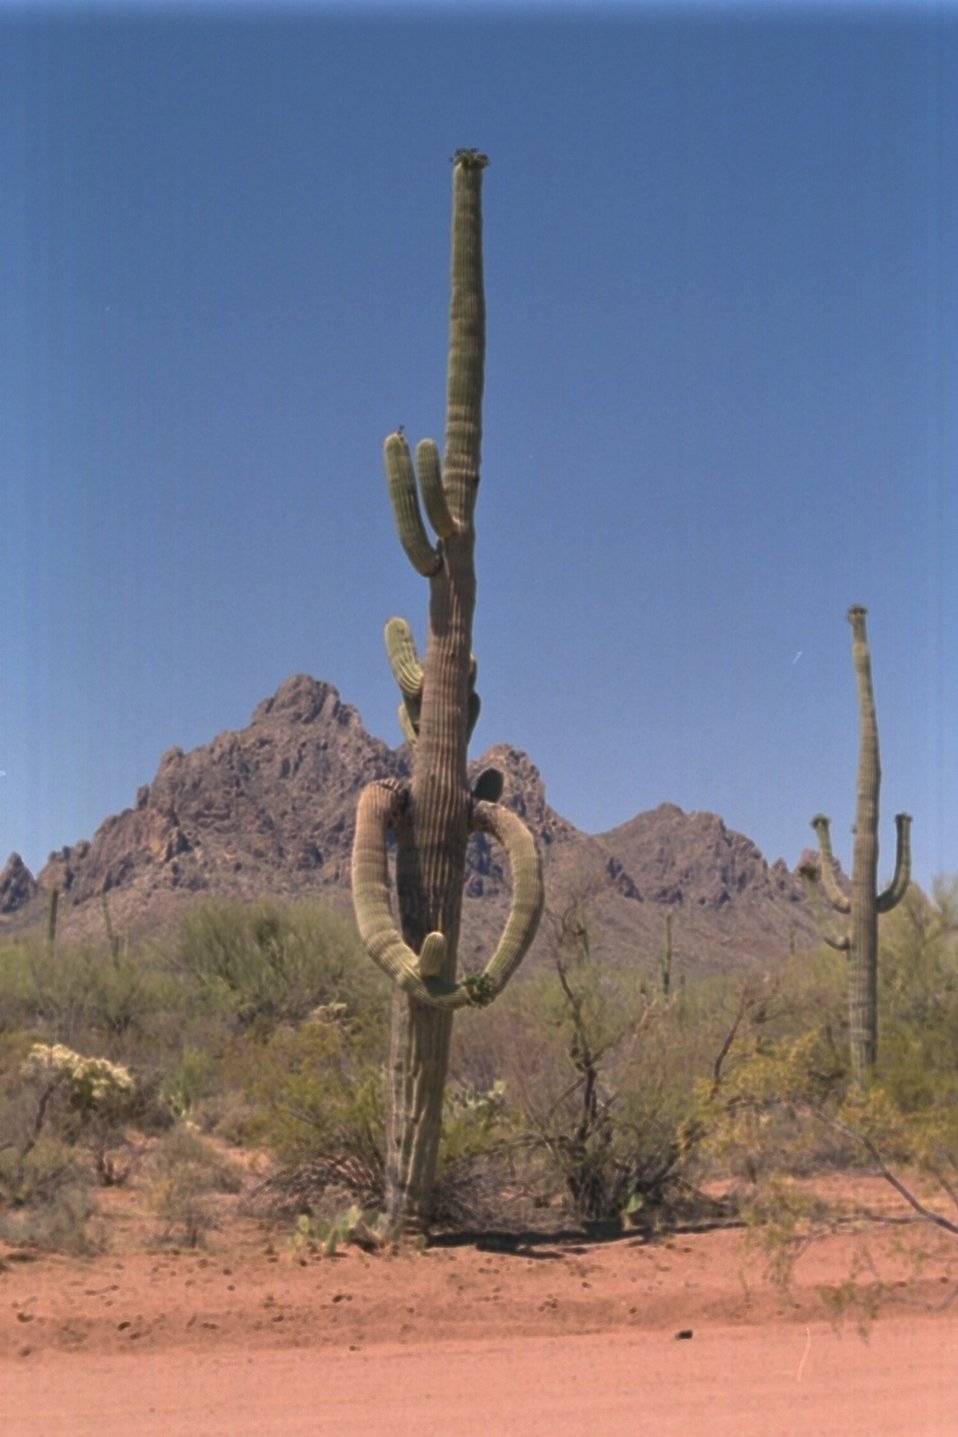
Saguaro standing tall in the Ironwood Forest National Monument. In the backgound are the Ragged Top Mountains, described as the biological and geological crown jewel of the Silver Bell Mountains.